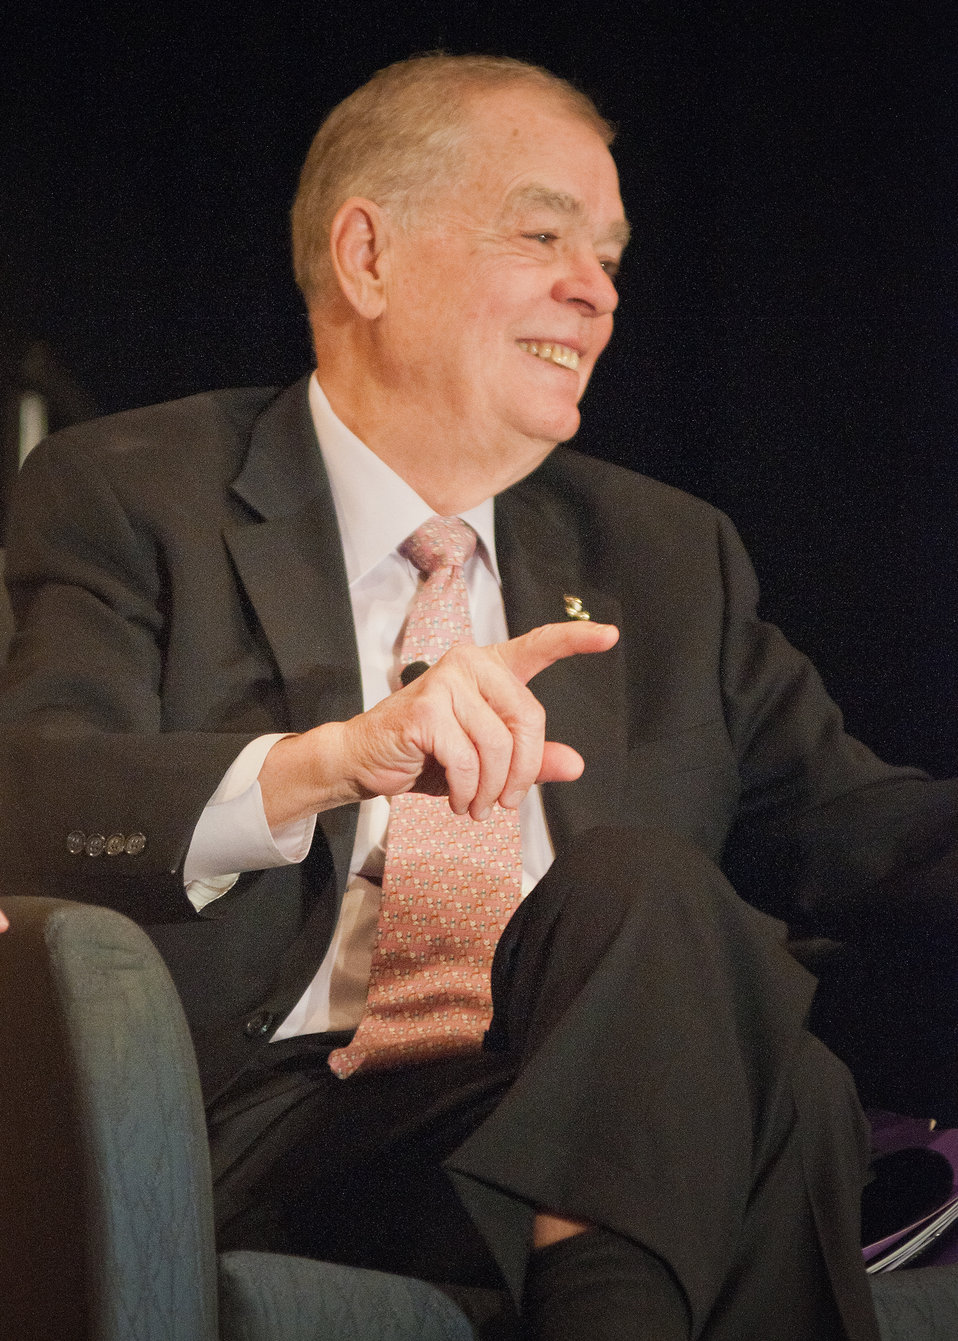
At the 2012 Agricultural Outlook Forum, “Moving Agriculture Forward” in Arlington, VA, held on Thursday, February 23, 2012, 7 former Secretaries of Agriculture sat on the plenary panel “Visions of the Future” hosted by current Agriculture Secretary Tom Vilsack. John Block speaks out during the panel discussions.